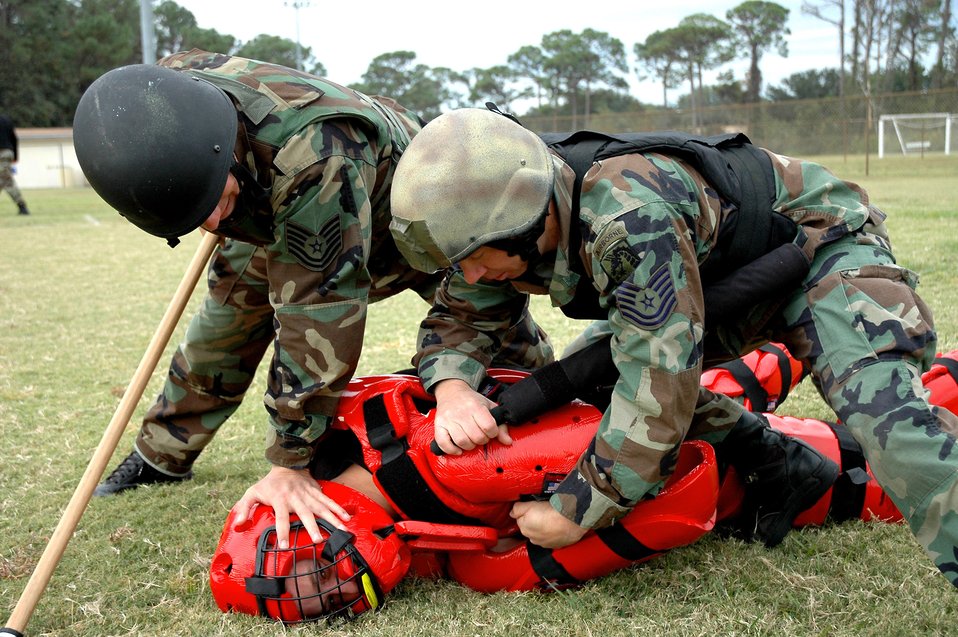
Air commandos learn martial arts from Marines

HURLBURT FIELD, Fla. -- A combat aviation advisor and an enlisted terminal attack controller practice subduing an attacker who attempted to disarm them. Working together, the two battlefield Airmen use enhanced pain techniques to control the assailant without doing permanent harm.